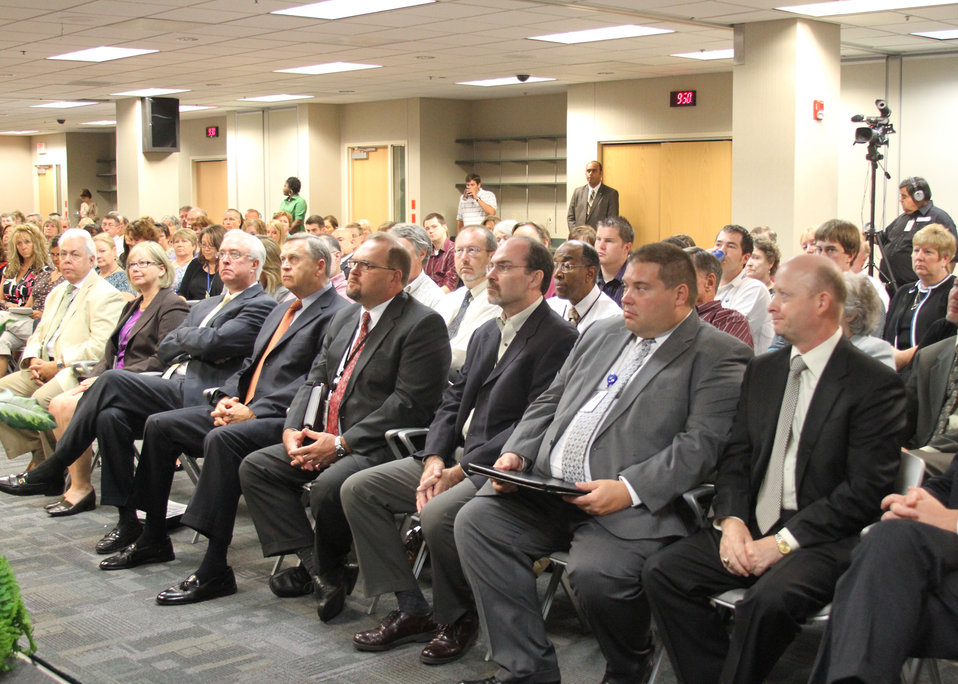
“Ask the Secretary” is a series of informal listening sessions with Agriculture Secretary Tom Vilsack and U. S. Department of Agriculture (USDA) employees. This is part of USDA’s Cultural Transformation initiative to transform the culture at USDA by creating a diverse, inclusive, and high-performing organization. Part of this process is to hold several listening sessions with USDA employees throughout the nation. The “Ask the Secretary” sessions are a forum for USDA employees to talk directly to Secretary Vilsack about issues, problems, and solutions in local field offices. This session was held at a USDA Service Center in Kansas City, MO on Wednesday, July 27, 2011.